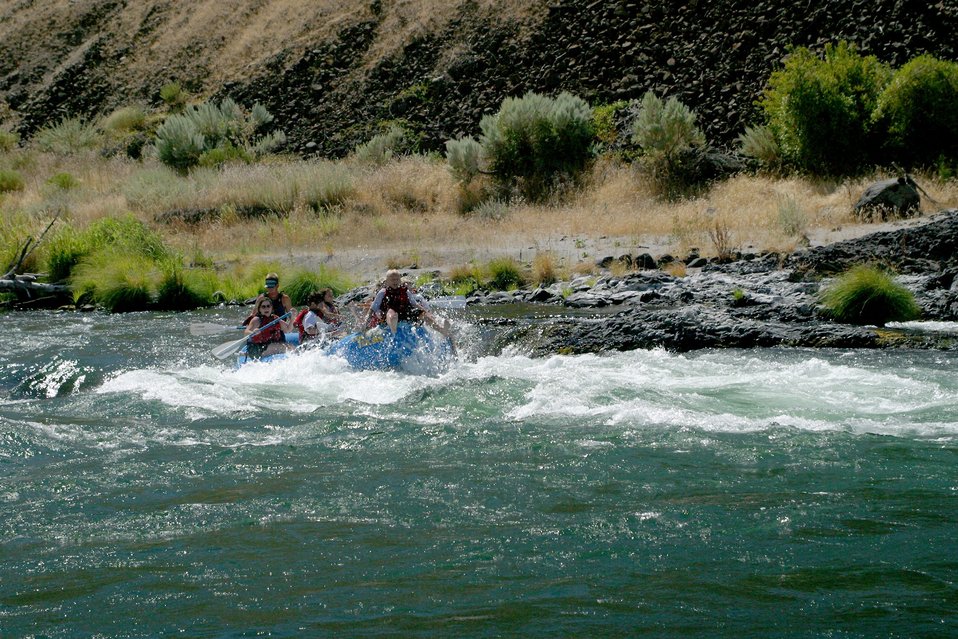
Looking up stream from the Sandy Beach take out.